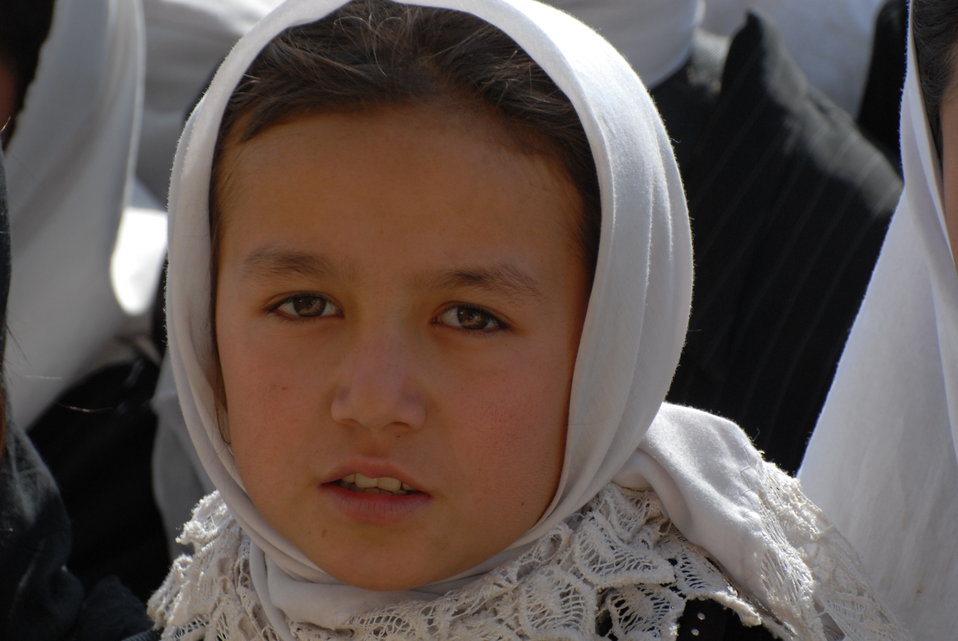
'On the Road' in Balkh Province